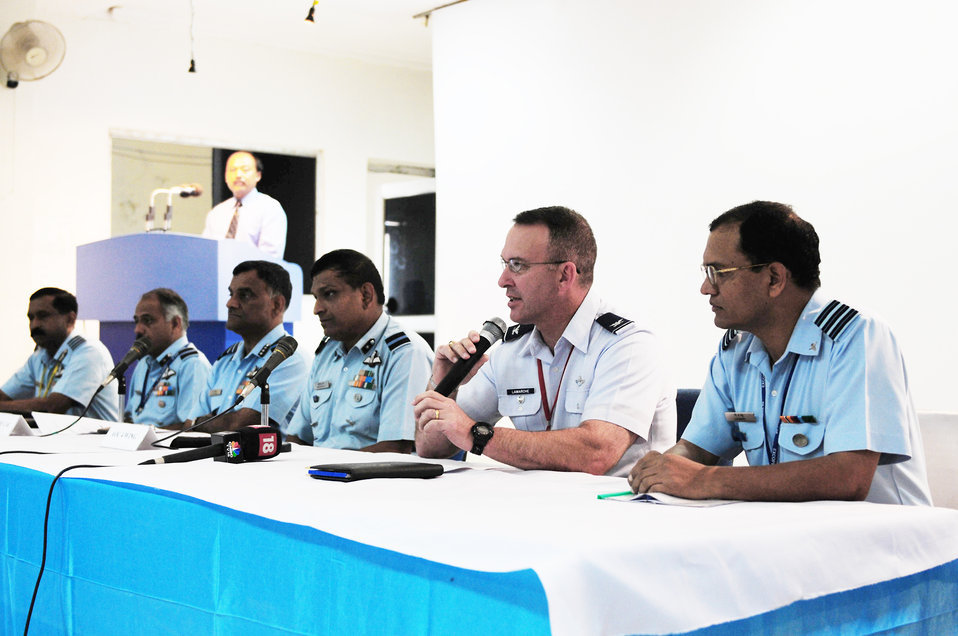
Exercise Cope India begins

Col. Raymond LaMarche provides comments to nearly 85 international media representatives during a Cope India press conference Oct. 19, 2009, at Air Force Station Agra, India. More than 150 U.S. Air Force and Army personnel are participating in Cope India, a United States and India airlift exercise that provides training for humanitarian assistance and disaster relief operations. Colonel LaMarche is the exercise director for Cope India.